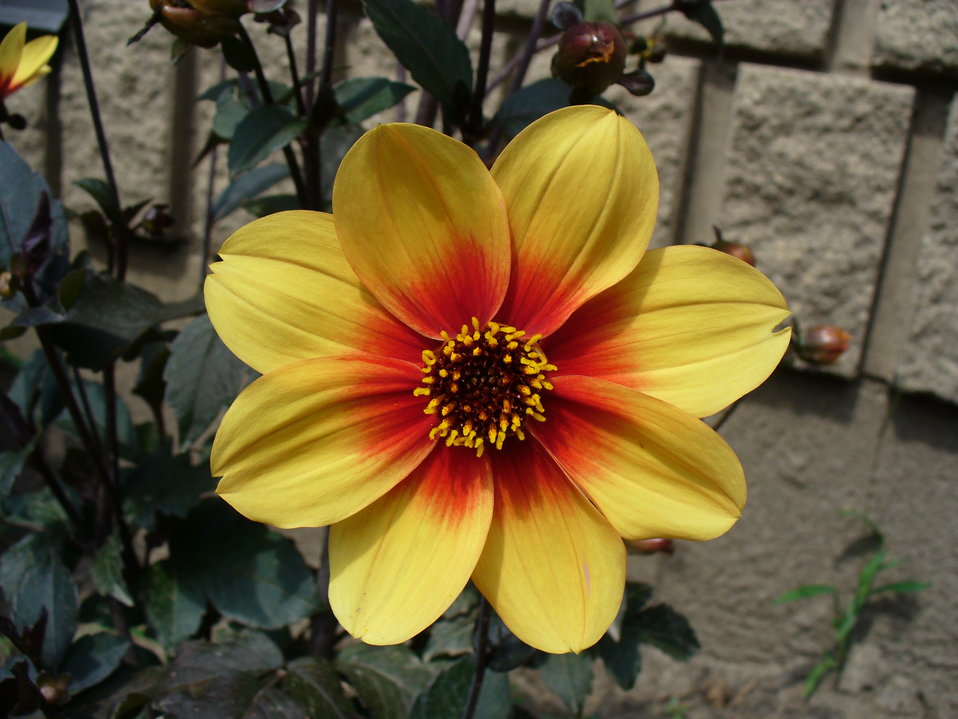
I am the originator of this photo. I hold the copyright. I release it to the public domain. This photo depicts a flower.